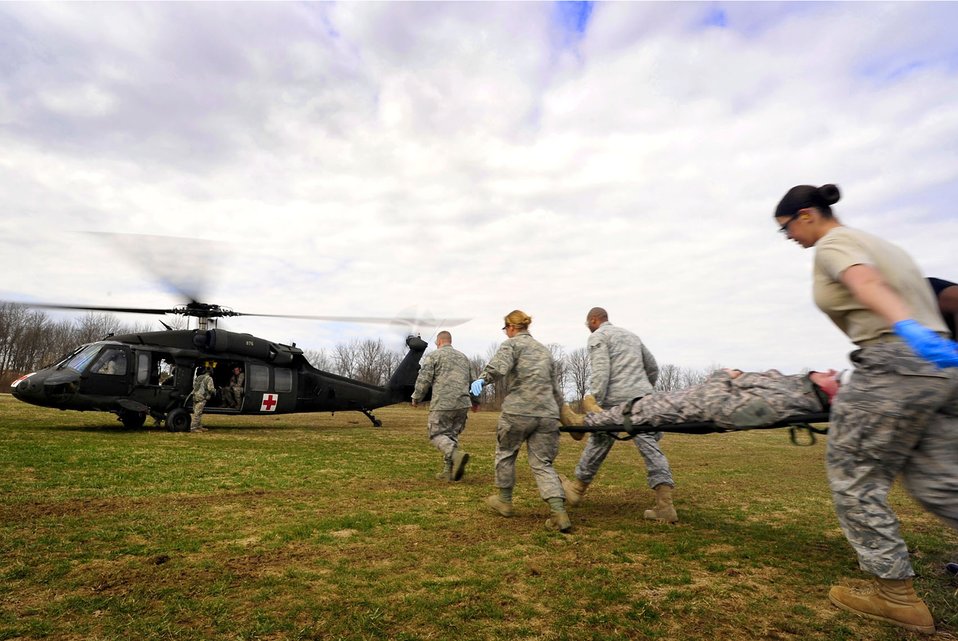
Vibrant Response 11.1

Airmen with the 99th Medical Group, stationed at Nellis Air Force Base, Nev., carry a ?patient? to a UH-60 Black Hawk March 17, 2011, during Exercise Vibrant Response at Camp Atterbury, Ind. Defense Secretary Robert Gates recently promised more forward-deployed medical capabilities for service members in Afghanistan.